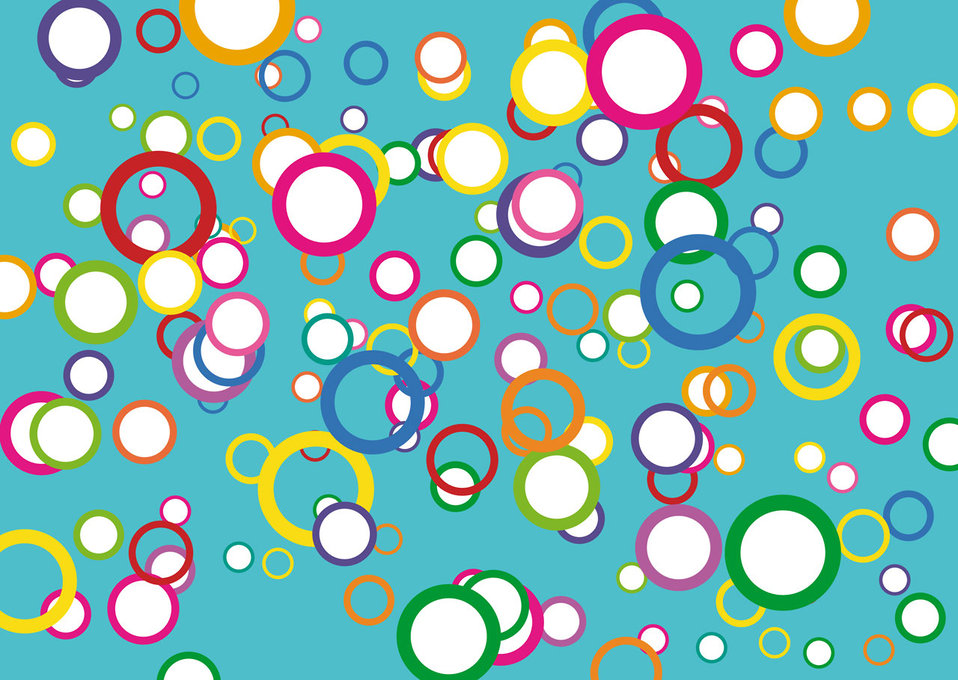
Circles 1

Abstract color.